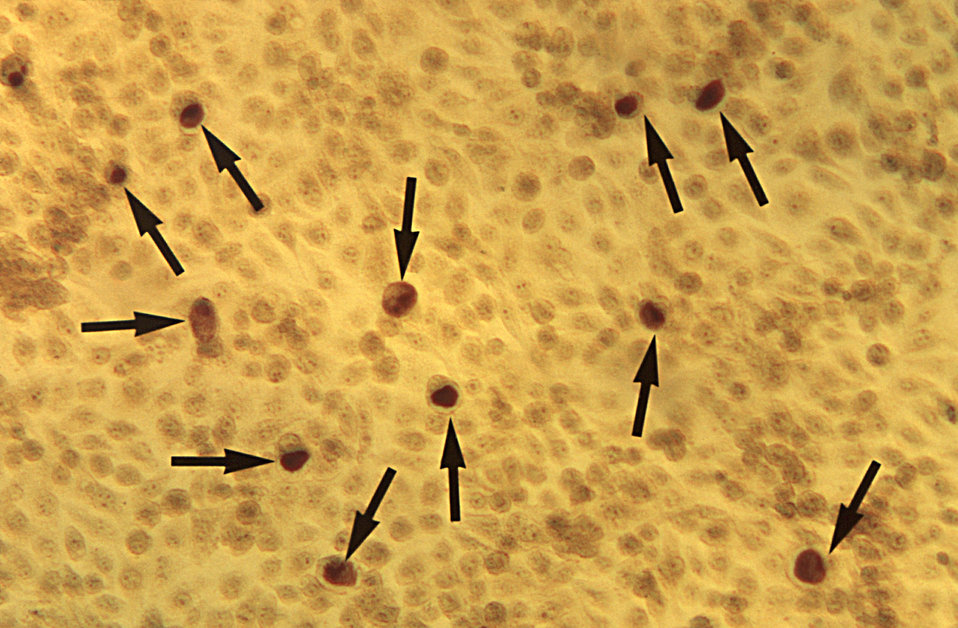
This McCoy cell monolayer micrograph reveals a number of intracellular C. trachomatis inclusion bodies; Magnified 50X.